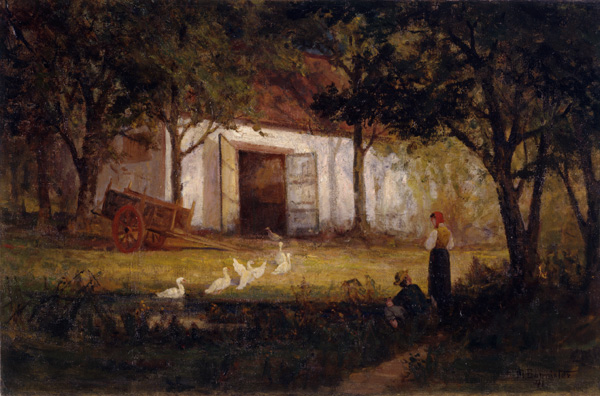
After the Bath, oil on canvas painting by Edward Mitchell Bannister, 1891, San Antonio Museum of Art